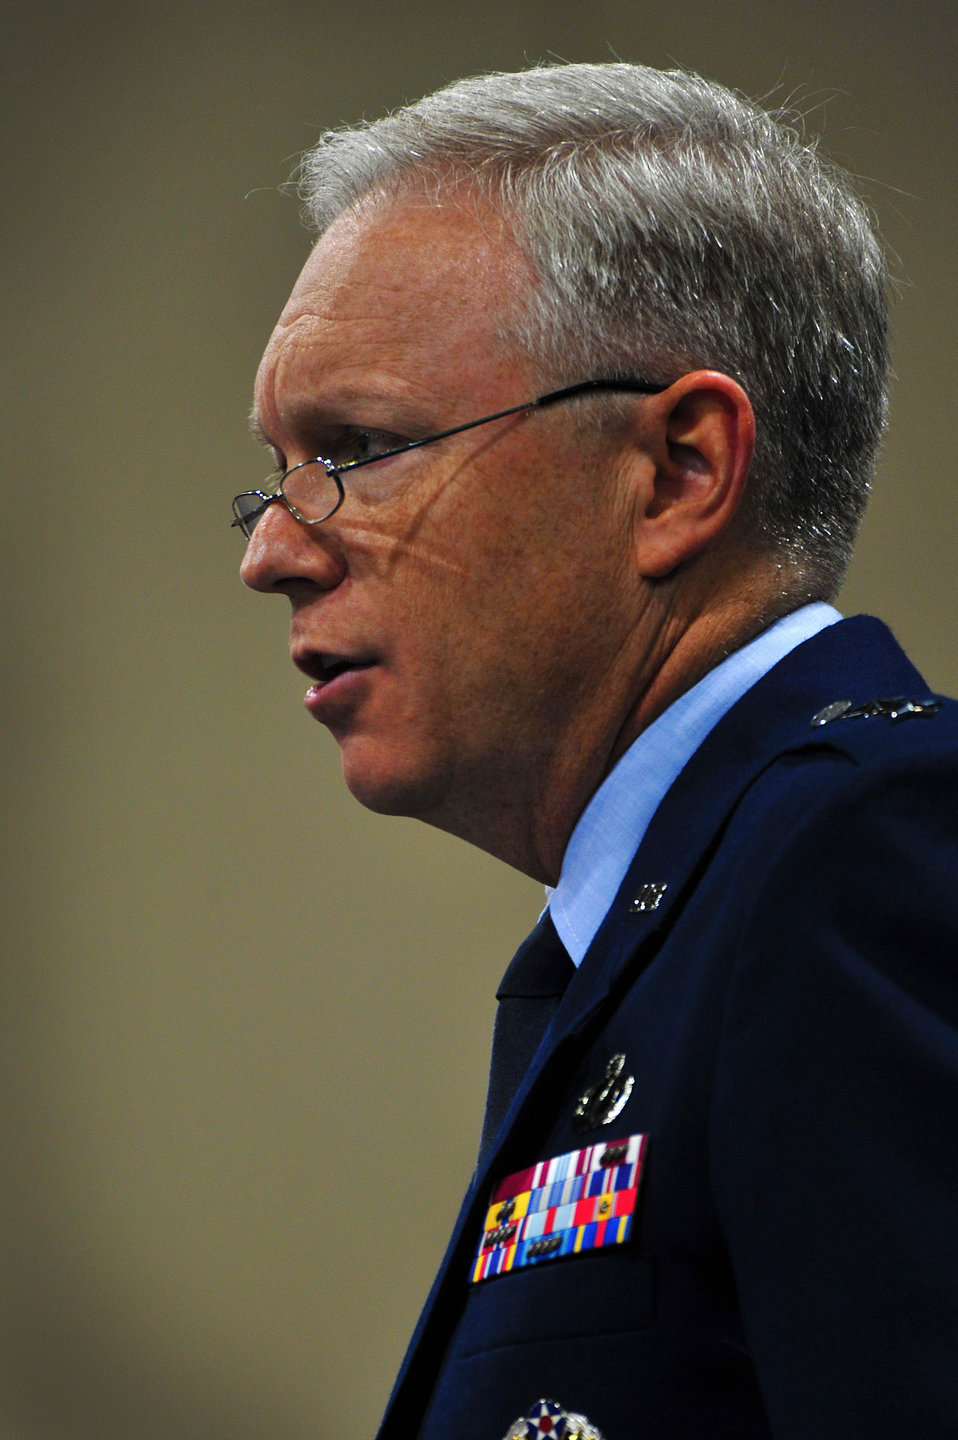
KC-46

Maj. Gen. John F. Thompson, KC-46 Tanker Program director, answers questions regarding the KC-46 Tanker during a presentation at the 2012 Air Force Association Air and Space conference in Washington, D.C., Sept. 18, 2012. The aircraft configuration will advance from the commercial Boeing model 767-200ER aircraft to a Boeing model 767-2C Provisioned Freighter variant before final modification into a military certified KC-46 tanker.